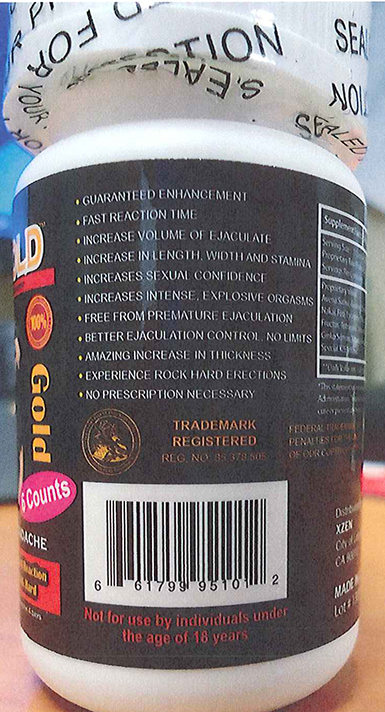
RECALLED – Dietary Supplement

April 1, 2014 – Product Recall – Nova Products, Inc. Issues Voluntary Nationwide Recall of Dietary Supplements with Undeclared Active Pharmaceutical Ingredients.